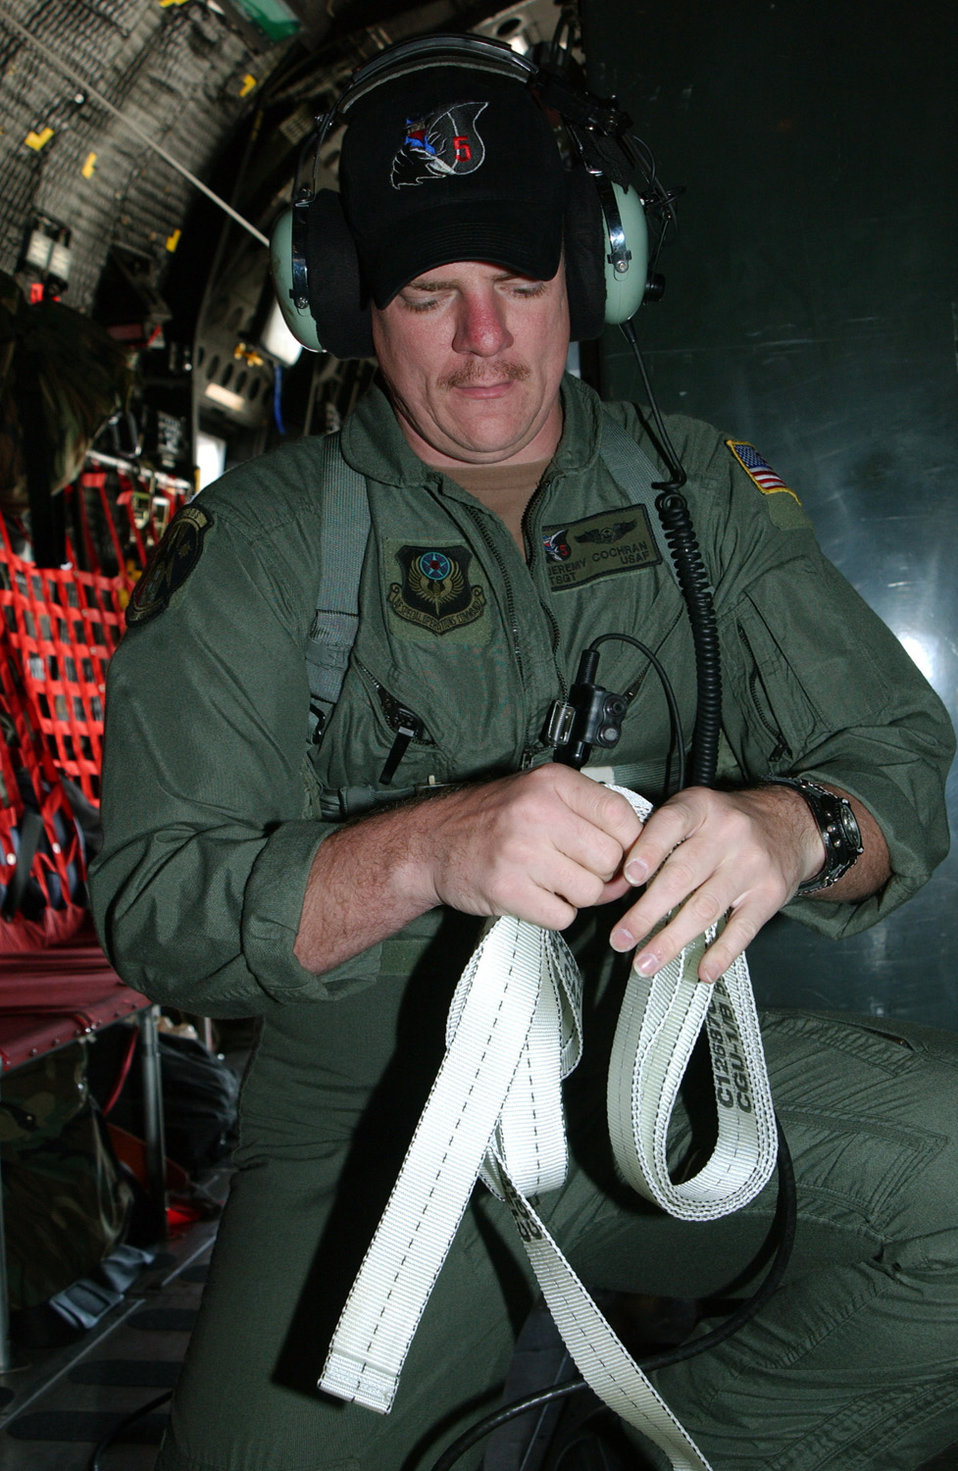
Adios Unitas

PUNTA DEL ESTE, Uruguay -- Tech. Sgt. Jeremy Cochran rolls up a tie down strap in an MC-130P Combat Shadow during a flight from here for Unitas 2004. The exercise, which ended Nov. 17, is the largest and longest-held naval exercise in the Americas. Sergeant Cochran is a loadmaster assigned to the 5th Special Operations Squadron at Eglin Air Force Base, Fla.